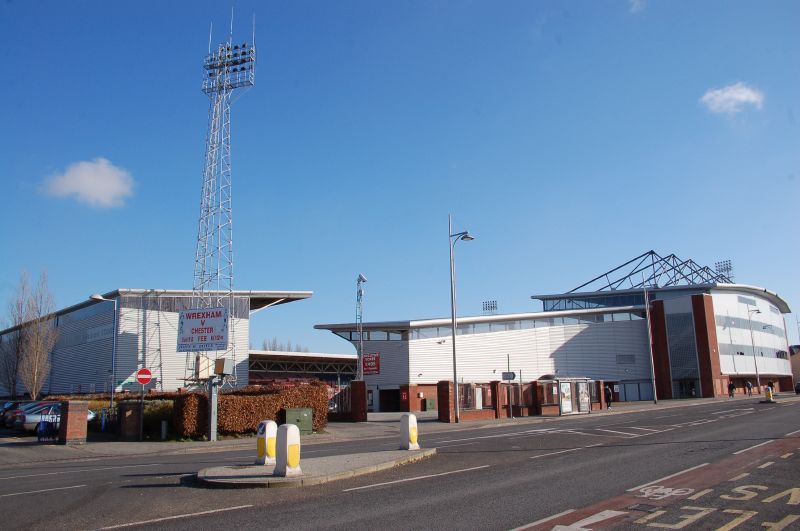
Author: Spicke01.